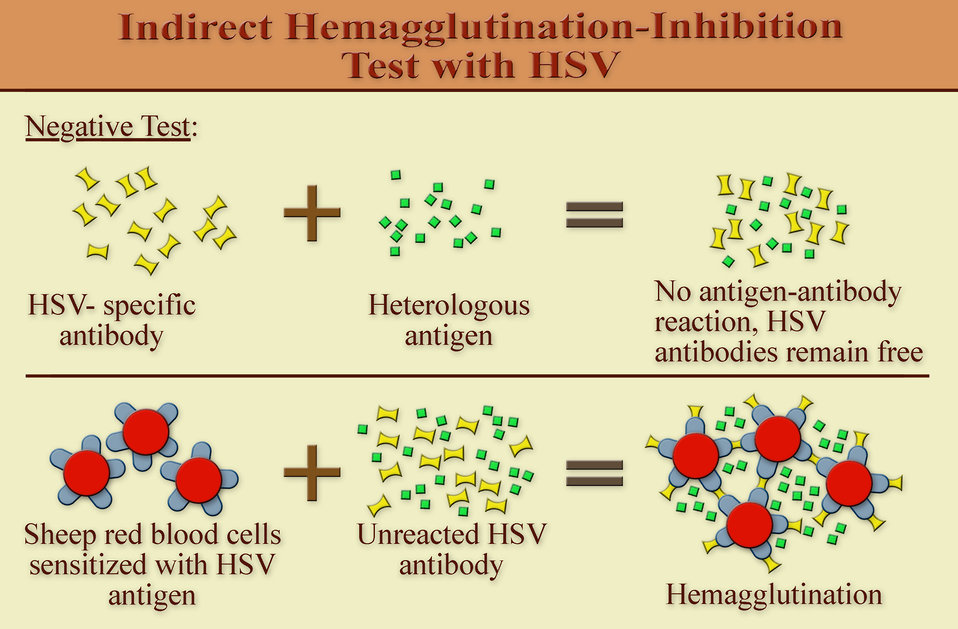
At the component level, this diagram illustrates what takes place microbiologically during an indirect hemagglutination (IHA) inhibition test, which implements the herpes simplex virus (HSV) antigen in order to detect the presence of the HSV-specific antibody.